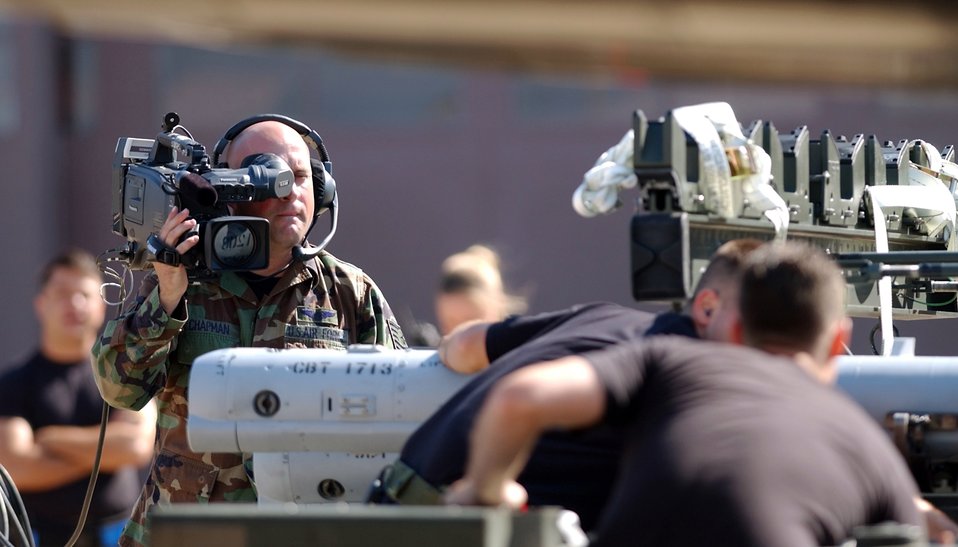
William Tell 2004

TYNDALL AIR FORCE BASE, Fla. (AFPN) -- Tech. Sgt. Jamie Chapman films the static load portion of William Tell 2004 here Nov. 9. He is a member of the William Tell Visual Information Documentation team and assigned to the 30th Communications Squadron at Vandenberg Air Force Base, Calif.